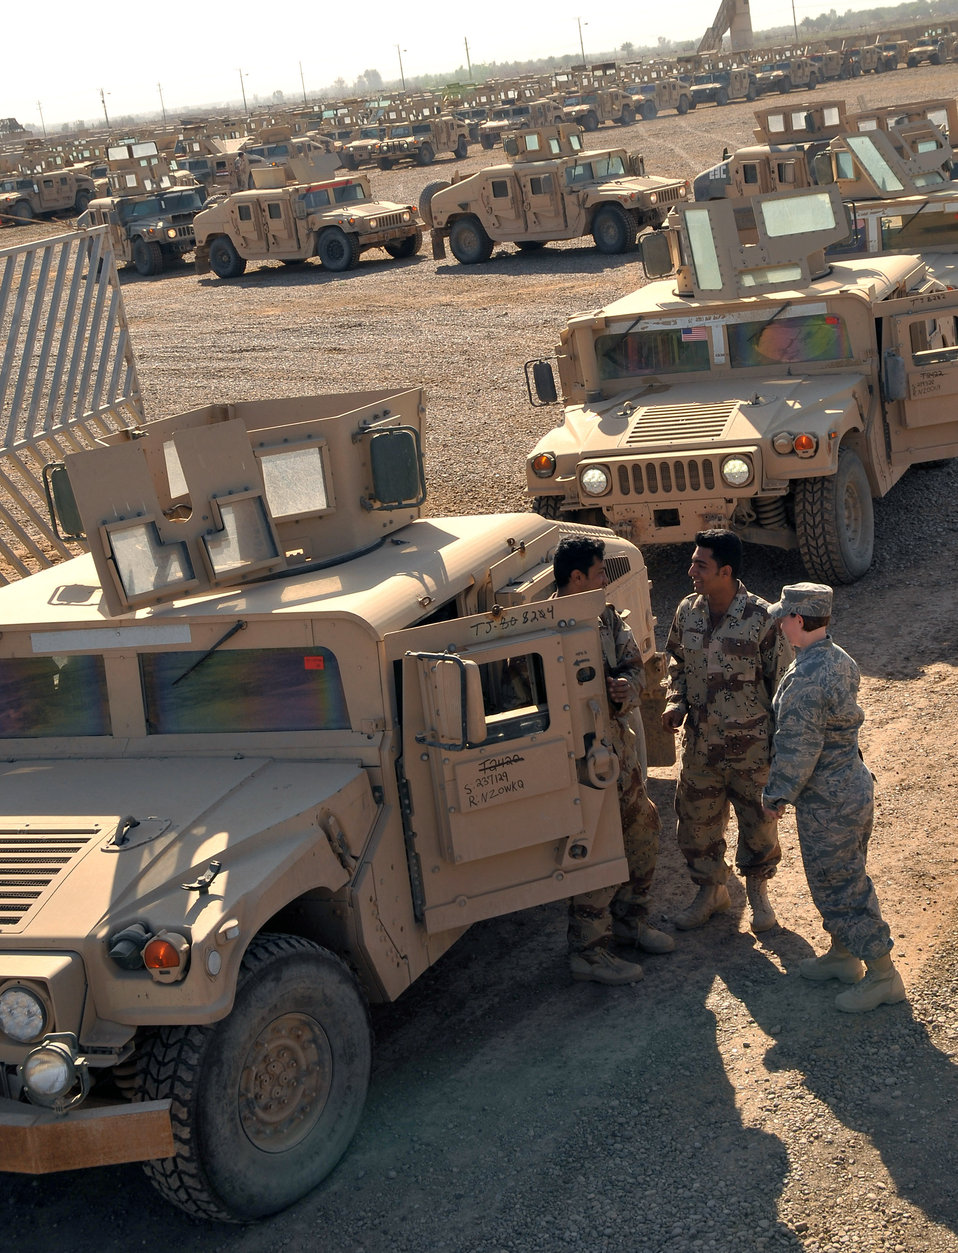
Airmen distribute Humvees to Iraqi forces

1st Lt. Victoria Smith speaks with Iraqi army soldiers prior to them driving M1114 Humvees to the Iraqi-run section in March at Camp Taji, Iraq. Lieutenant Smith is assigned to the 732nd Air Expeditionary Group and is the Taji Redistribution Property Assistance Team officer in charge. She is deployed from Holloman Air Force Base, N.M., and is a Colorado Springs, Colo., native.